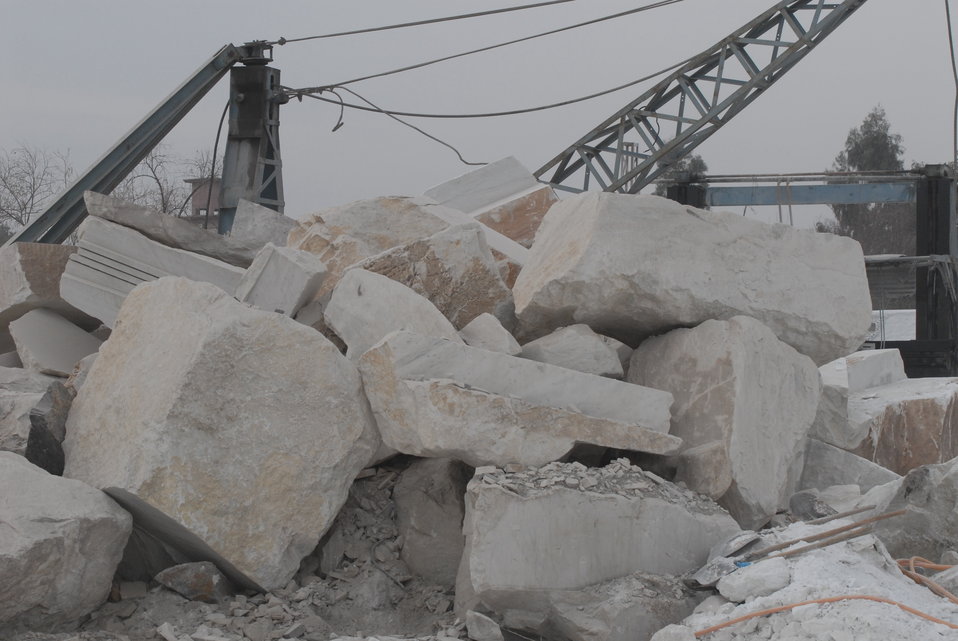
'On the Road' in Nangarhar Province